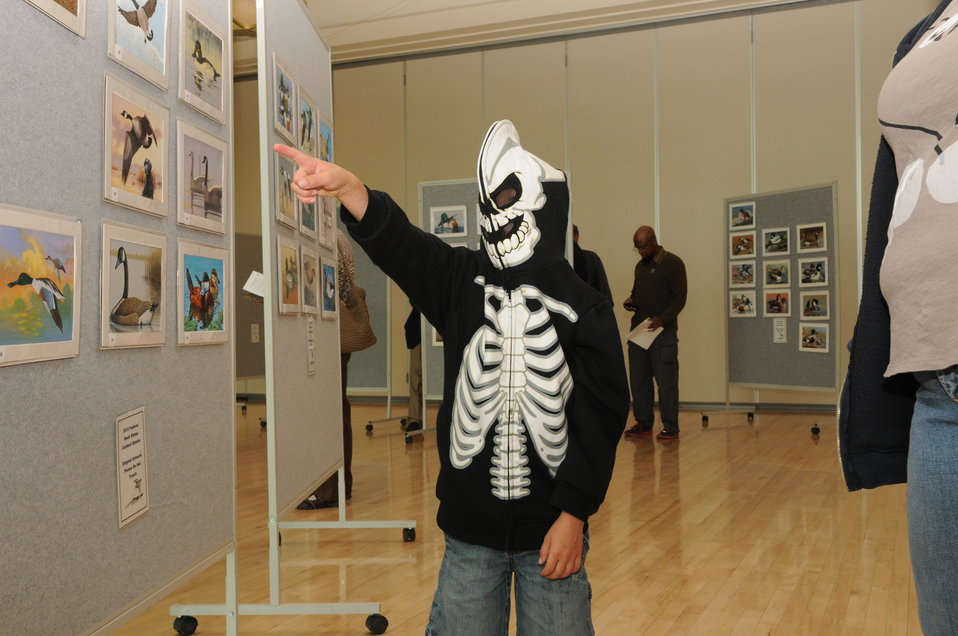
Youth Involvement

The U.S. Fish & Wildlife Service sponsored the 2012 Federal Duck Stamp Art Contest September 28 and 29 in Ogden, Utah, at Weber State University. A panel of five judges was responsible for choosing the art work used to design the 2013-2014 Migratory Bird Hunting and Conservation Stamp.